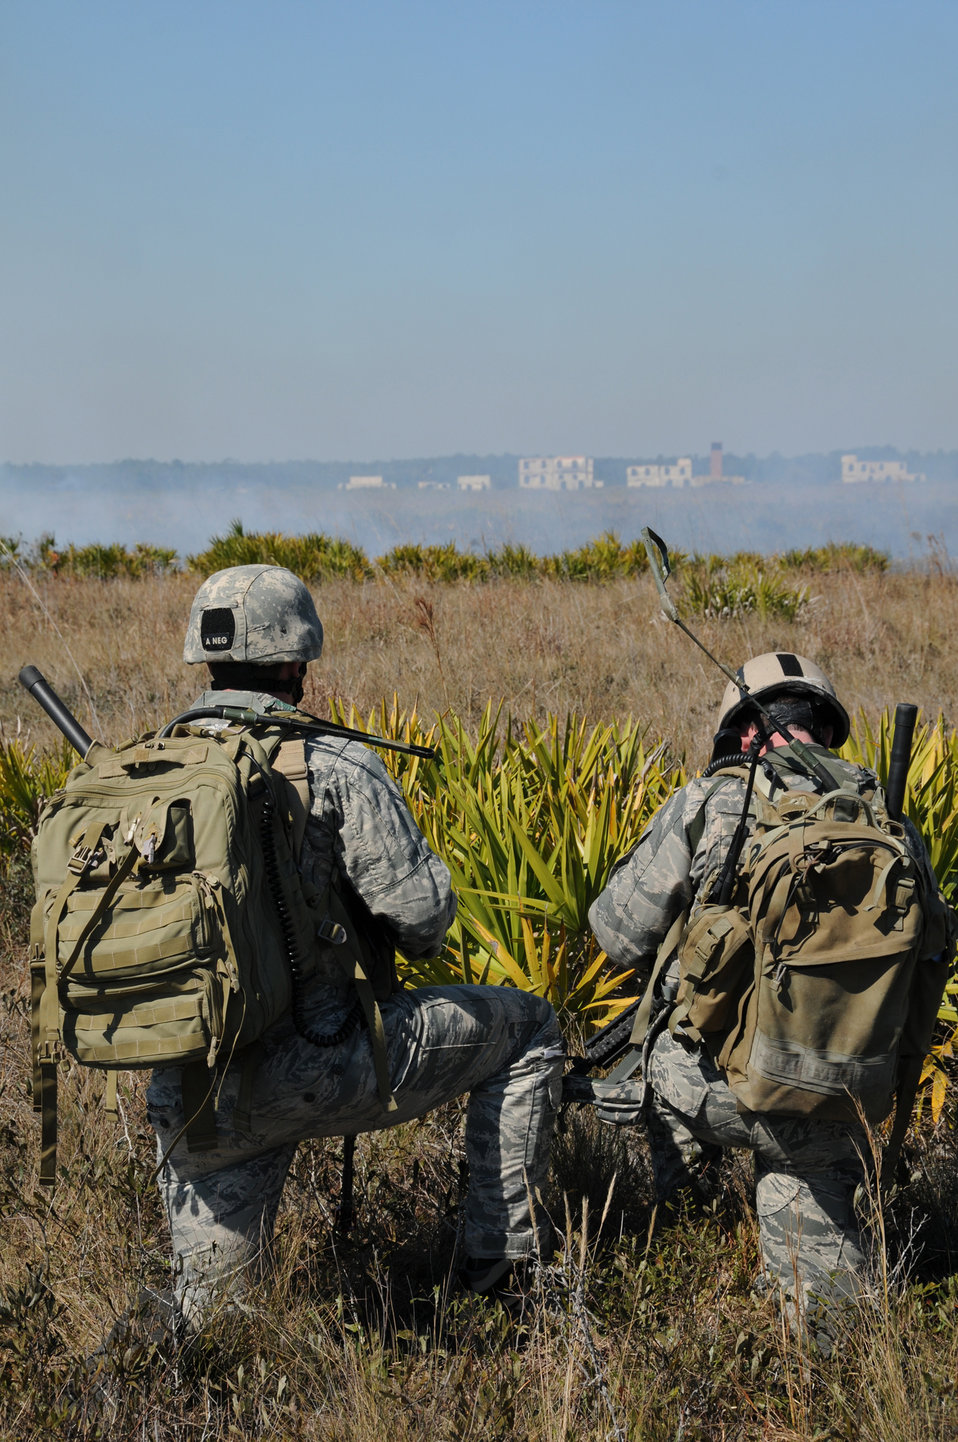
Atlantic Strike

Staff Sgt. Cody McNorton and Senior Airman Joseph Flynn call in information during exercise Atlantic Strike Feb. 15, 2011, at Avon Park Air Force Range, Fla. Atlantic Strike is a coalition air-to-ground training exercise that simulates a deployed environment. Sergeant McNorton and Airman Flynn are members of the 14th Air Support Operations Squadron.